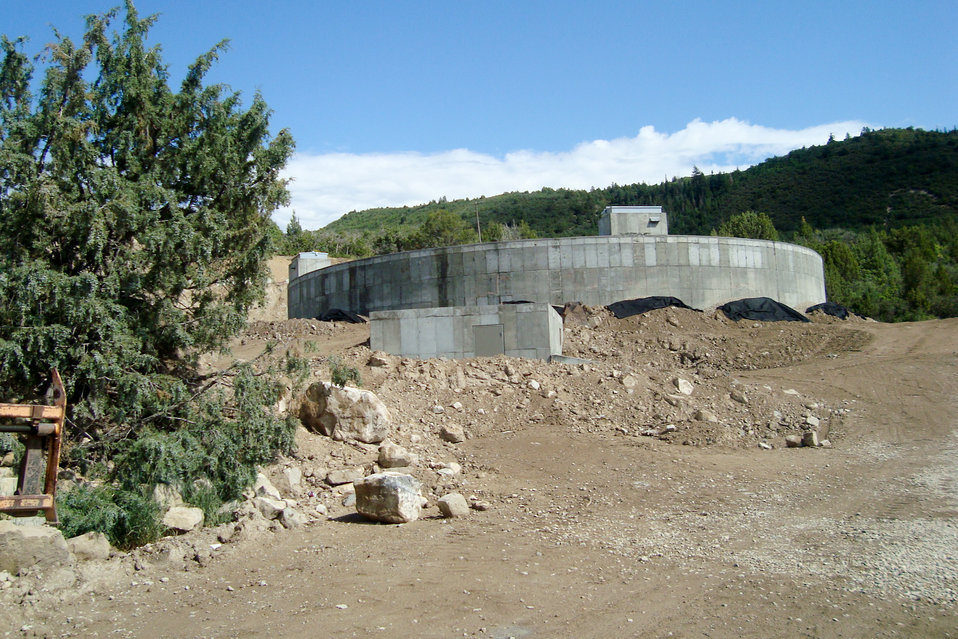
New water storage and water delivery system in Ephraim, Utah

A newly constructed water tank, shown March, 2012, will store and deliver water to a rural community in Ephraim, Utah. The water tank was completed thanks to the U.S. Army Corps of Engineers Sacramento District’s Section 595 program, which has assisted over 30 rural communities with critical water and wastewater infrastructure improvements since 2005.